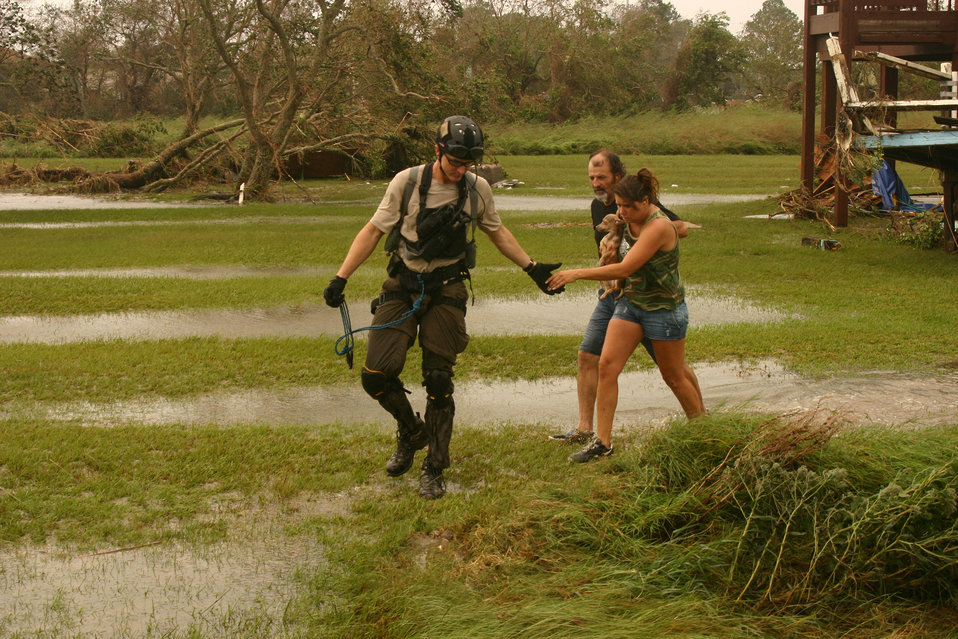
Helicopter aircrews rescue hurricane victims

A Joint Task Force-129 pararescueman rescues hurricane victims Sept. 13 in Crystal Beach, Texas. The JTF-129 crews rescued 48 people and pets stranded in the Galveston area.